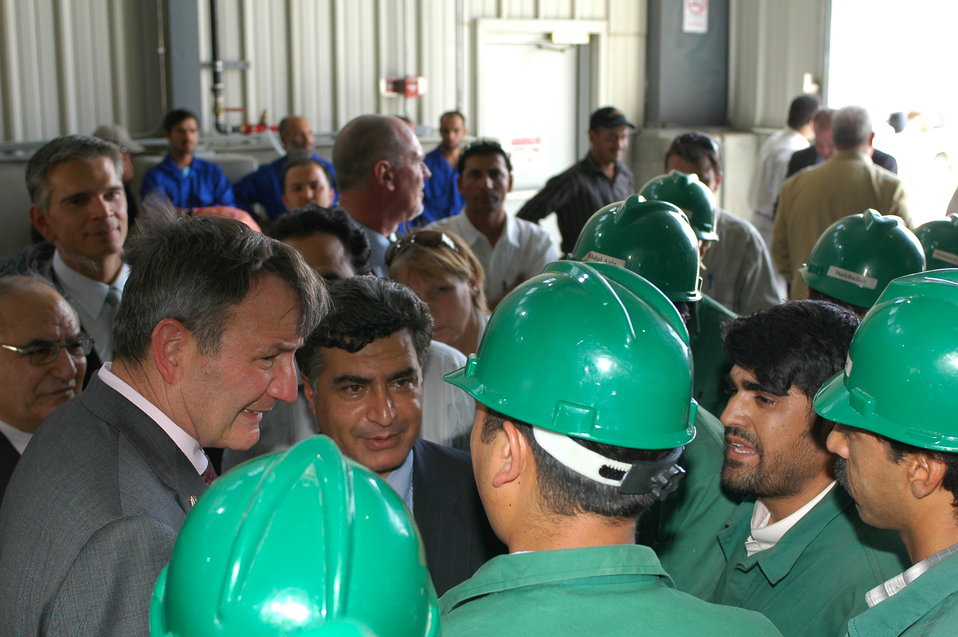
105 MW Tarakhil Power Plant Handover